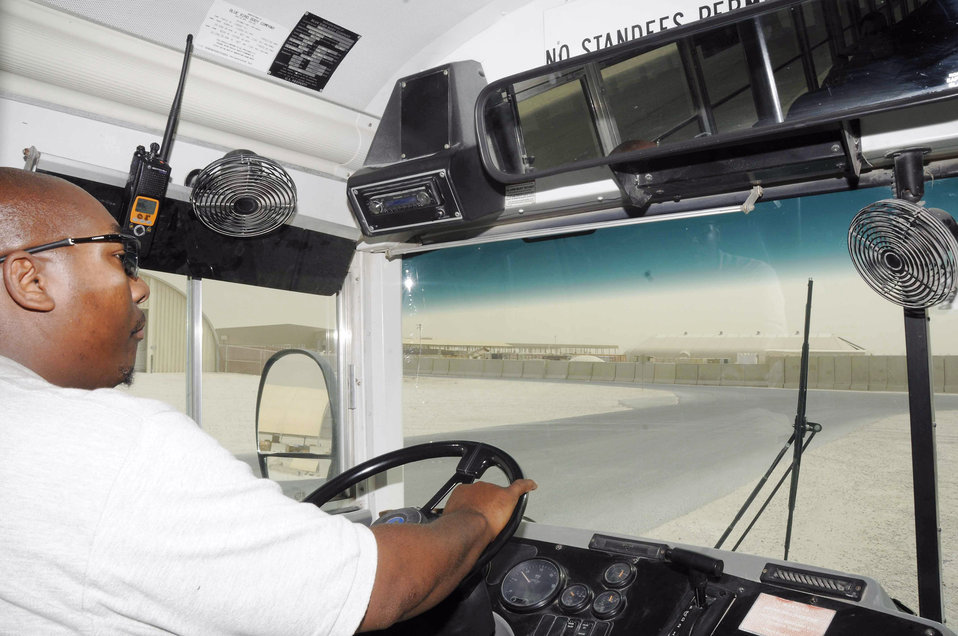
Airmen improve processes to increase efficiency

Terence Purifoye picks up and drops off passengers at a bus stop July 22 at a Southwest Asian air base. Mr. Terence is a 379th Expeditionary Logistics Readiness Squadron vehicle operator from Miami.